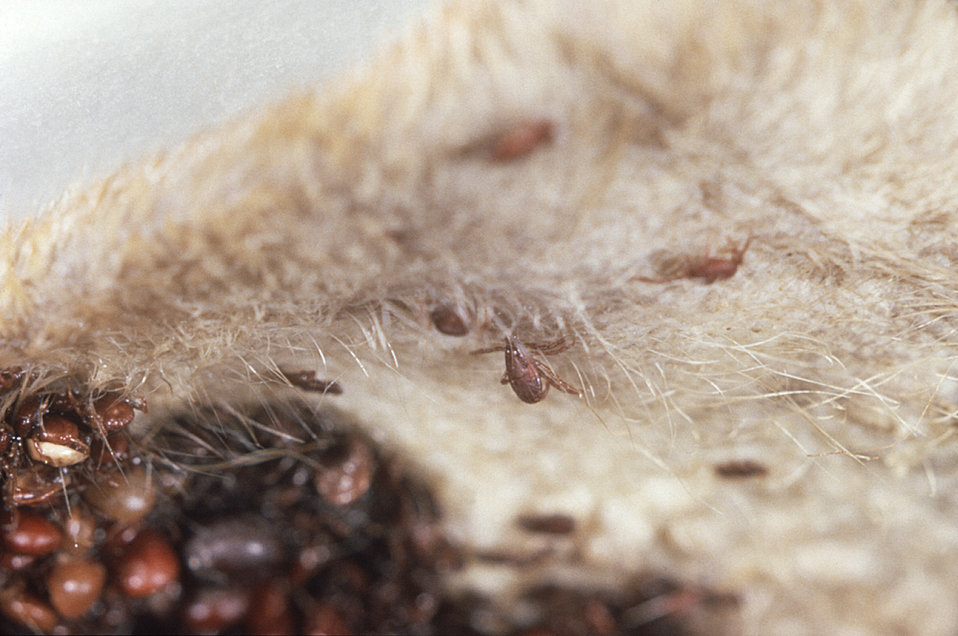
This image reveals a grouping of 'brown dog ticks', Rhipicephalus sanguineus infesting a dog's ear.